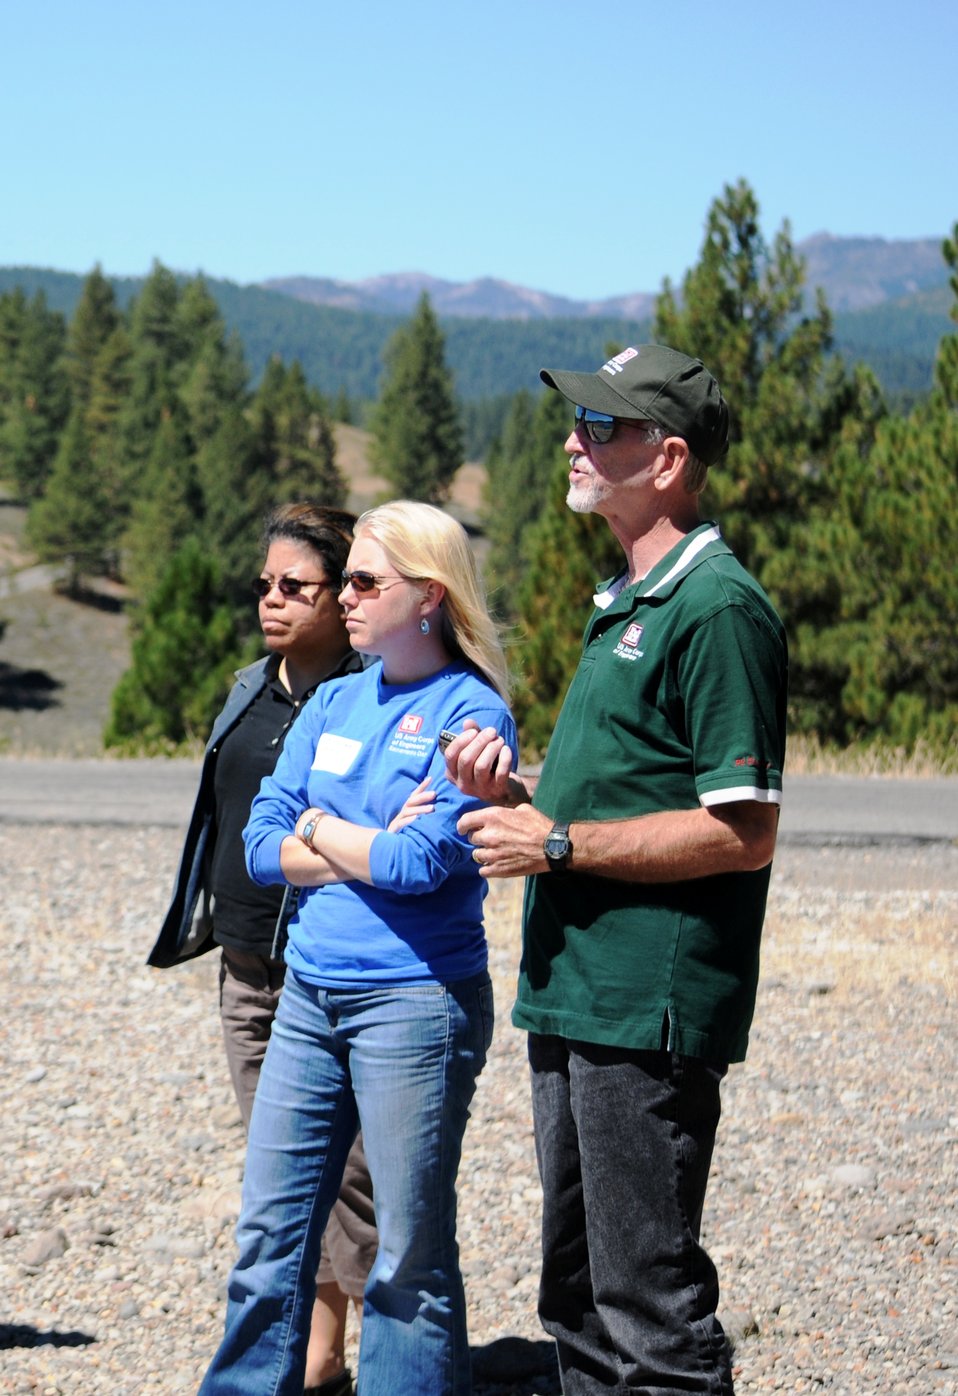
Martis Creek Dam emergency response exercise

(From left) Marchia Bond, Christy Jones and Doug Grothe, with the U.S. Army Corps of Engineers Sacramento District, tour Martis Creek Lake and Dam following an emergency response exercise in Truckee, Calif., Aug. 29, 2012. The exercise provided federal, state and local agencies an opportunity to work alongside each other and evaluate current emergency response plans and capabilities.

Martis Creek Dam, located about 32 miles southwest of Reno, Nev., was completed in 1972 and provides flood risk management and recreational benefits.